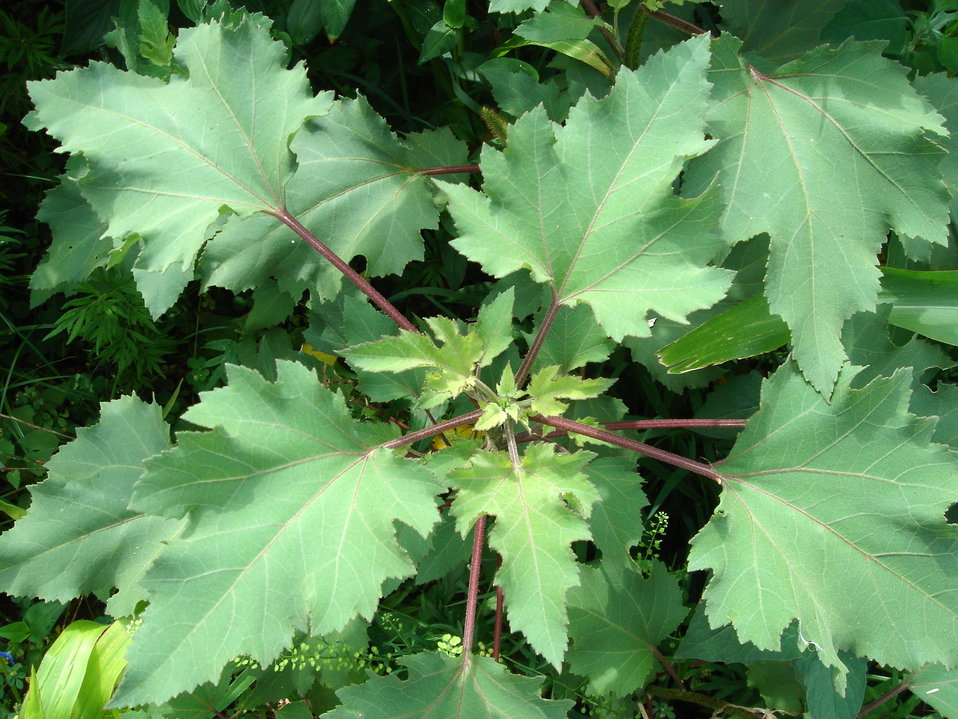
Xanthium strumarium